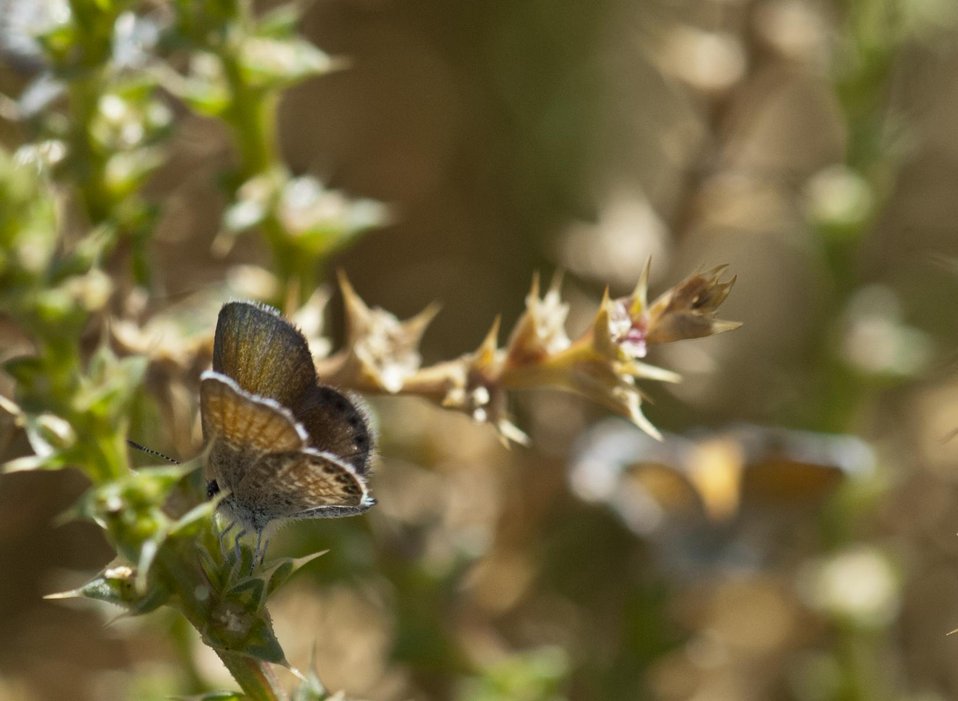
Western Pygmy Blue Butterfly 1